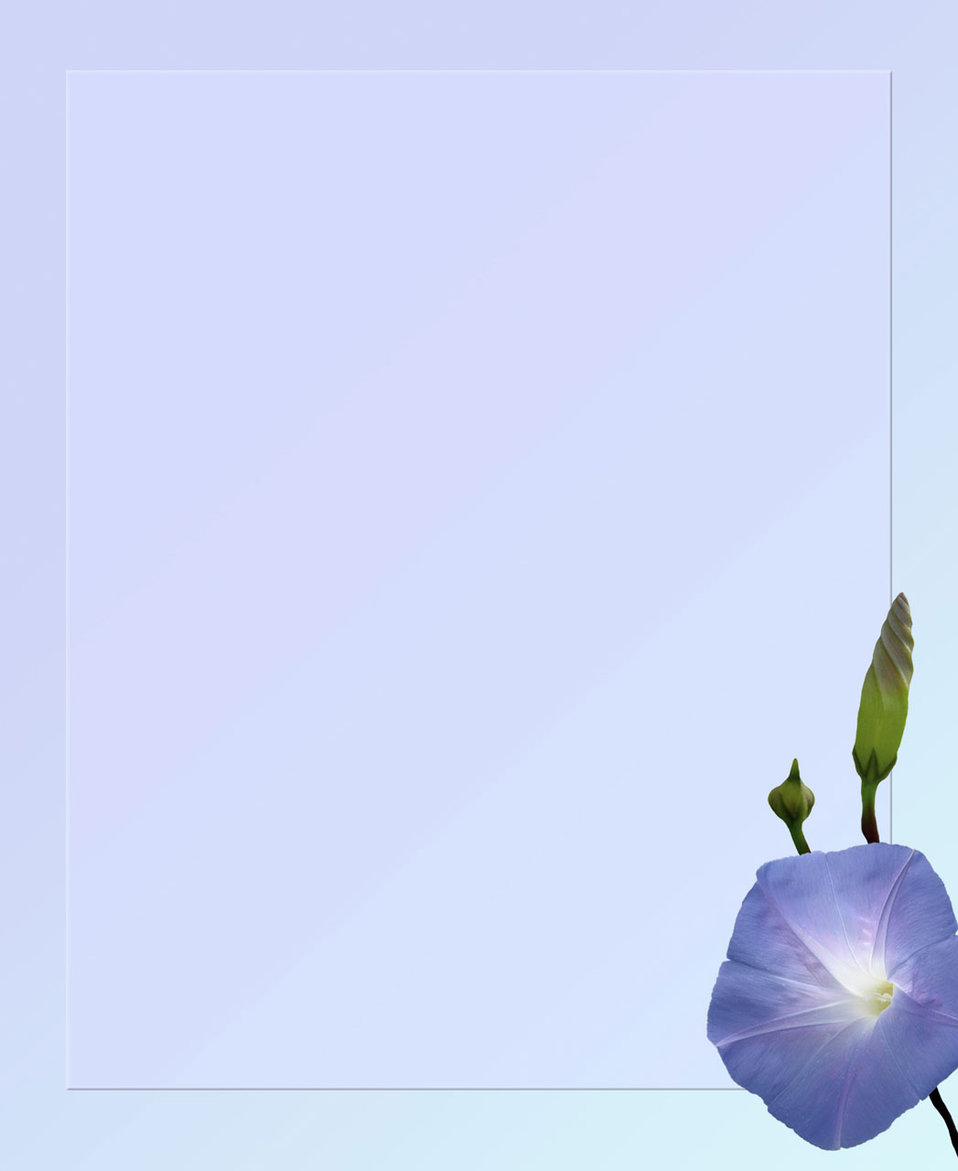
Morning glory background

Background image with morning glory blossom.